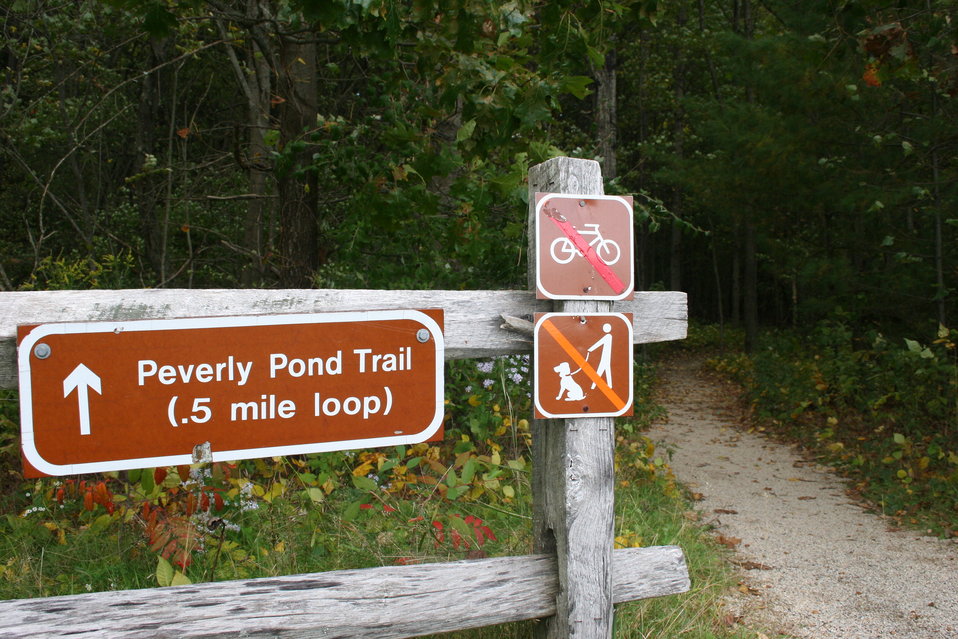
Peverly Pond trailhead at Great Bay National Wildlife Refuge, Newington, NH.